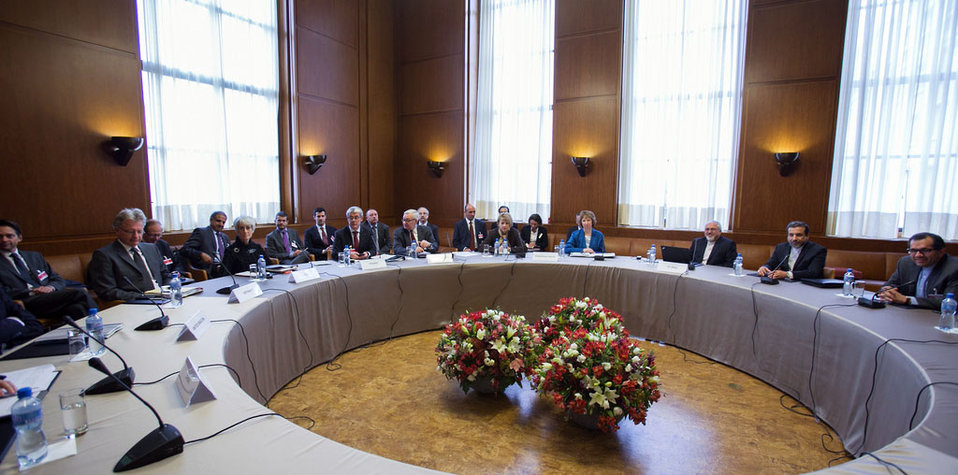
Under Secretary Sherman Participates in the P5 1 Talks With Iran

Under Secretary for Political Affairs Wendy Sherman leads the U.S. delegation to the P5 1 talks with Iran in Geneva, Switzerland, on October 15, 2013. Also pictured in the photo are EU High Representative Catherine Ashton and Iranian Foreign Minister Javad Zarif.